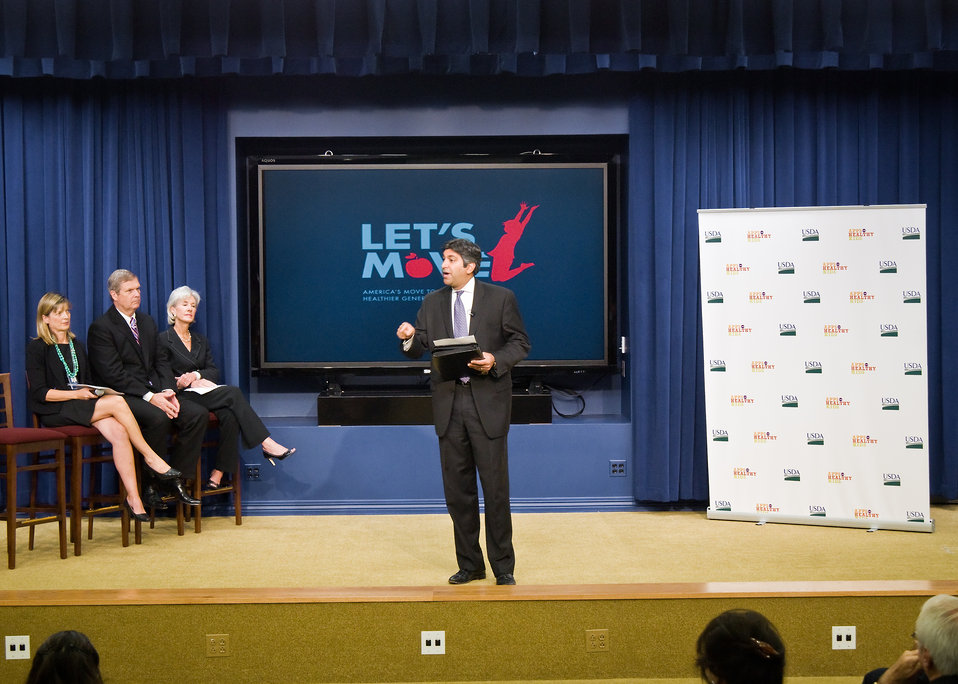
Agriculture Secretary Tom Vilsack and Health and Human Services Secretary Kathleen Sebelius listen as Aneesh Chopra, White House, Chief Technology Officer speaks of the importance of using information technology and social media to improve childhood nutrition as they honor the Winners of The Apps for Healthy Kids competition at the White House in Washington, DC, on Wednesday, September 29, 2010. The Apps for Healthy Kids competition is part of First Lady Michelle Obama’s Let’s Move campaign to end childhood obesity within a generation. The competition challenges software developers, game designers, students and other innovators to develop fun and engaging software tools and games to urge children, especially “tweens” (children ages 9-12) – directly or through their parents – to eat better and be more physically active. The applications are software tools or games for the web, personal computer, mobile handheld device, console or any software platform available to the public. USDA Photo 10di1506--28 by Bob Nichols.